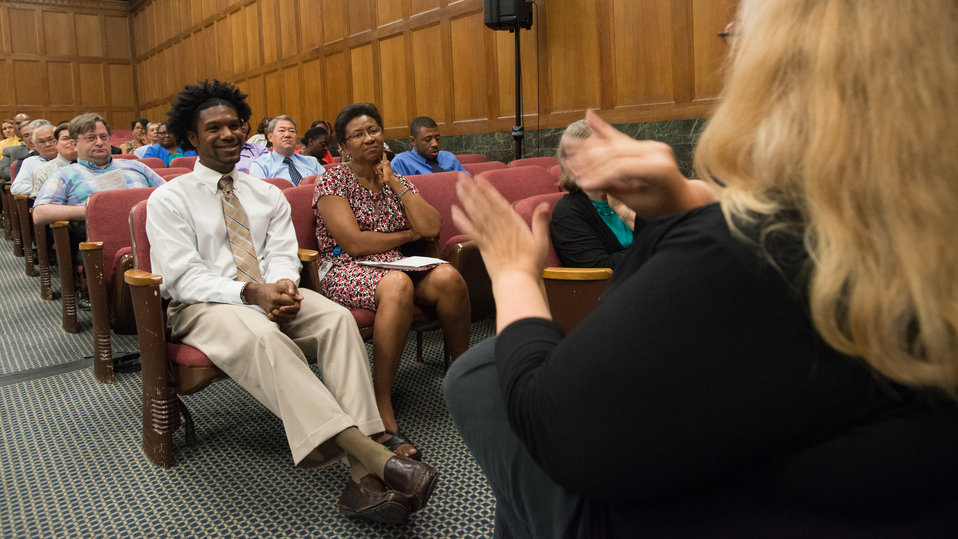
An American Sign Language (ASL) interprets U.S. Department of Agriculture (USDA) Rural Development (RD) Deputy Under Secretary Patrice Kunech remarks to hearing impaired U.S. Department of Agriculture (USDA) employees during the USDA’s Rural Development (RD) 2nd Annual Cultural Transformation kickoff opening ceremony and forums, themed “Employees Influencing Change,” on Tuesday, Aug. 13, 2013 USDA in Washington, D.C.